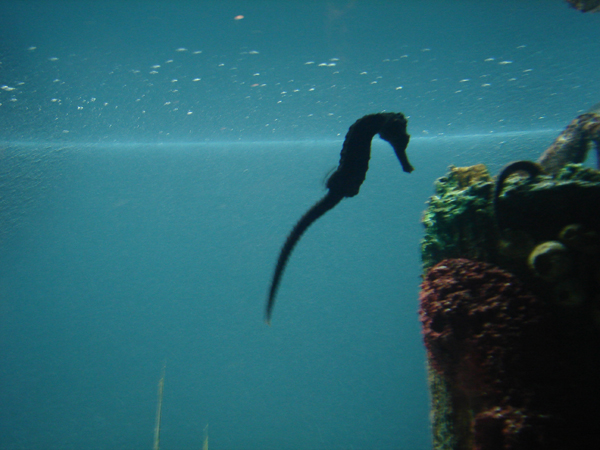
Photo by Angela Grider. A seahorse at the Georgia Aquarium.